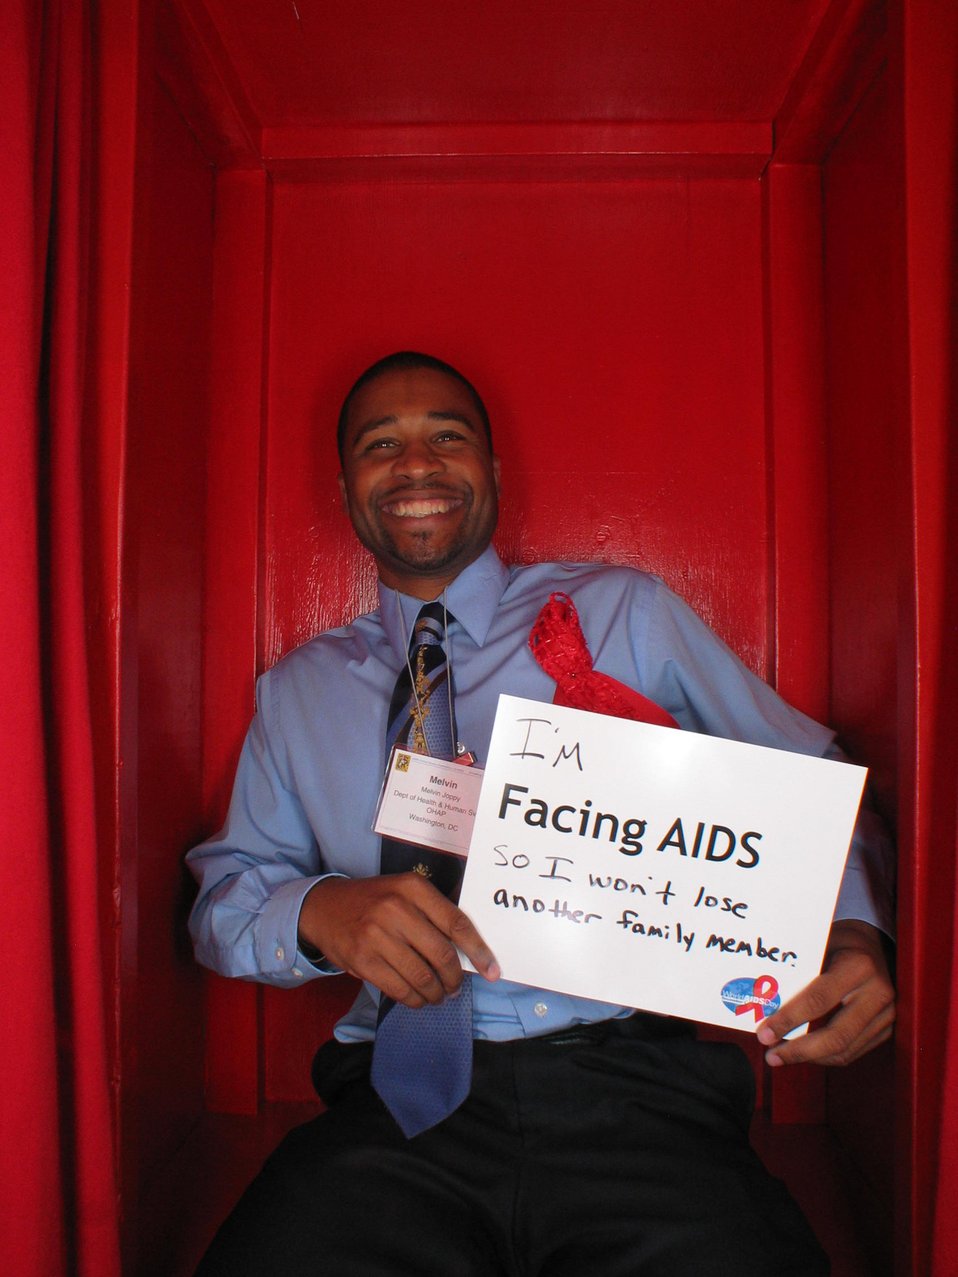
I'm Facing AIDS so I won't lose any family members.